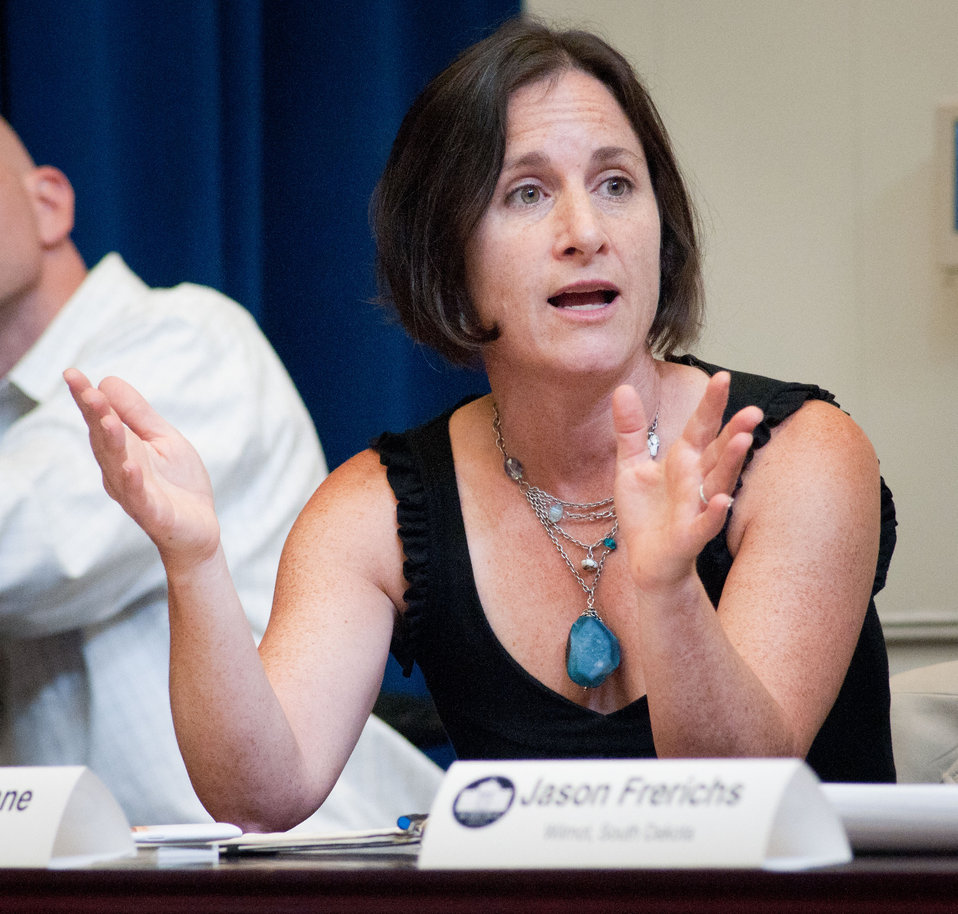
Deborah Kane, Vice President of Food and Farms a food hub in Oregon attended a meeting at the White House, in Washington, DC, on July 6, 2011. She was asked to participate along with President Barack Obama, Agriculture Secretary Tom Vilsack, the President's Domestic Policy Adviser Melody Barnes and rural communities leaders from across the country for the White House Rural Champions of Change event to strengthen rural communities and promote economic growth. Deborah is the Vice President of Food and Farms at Ecotrust, a non-profit organization based in Oregon. She has led the way on some incredibly innovative and meaningful projects that are supporting Oregon’s small, rural farms while bringing healthy, local food to school cafeterias throughout the state. One of these projects, FoodHub (www.food-hub.org), allows for farmers and institutional purchasers to set up profiles and link up with one another, similar to Craigslist or even Match.com. She is also a host-site for the soon-to-be-launched national Food Corps, an AmeriCorps program that places service members in schools to establish gardens and provide nutrition education.